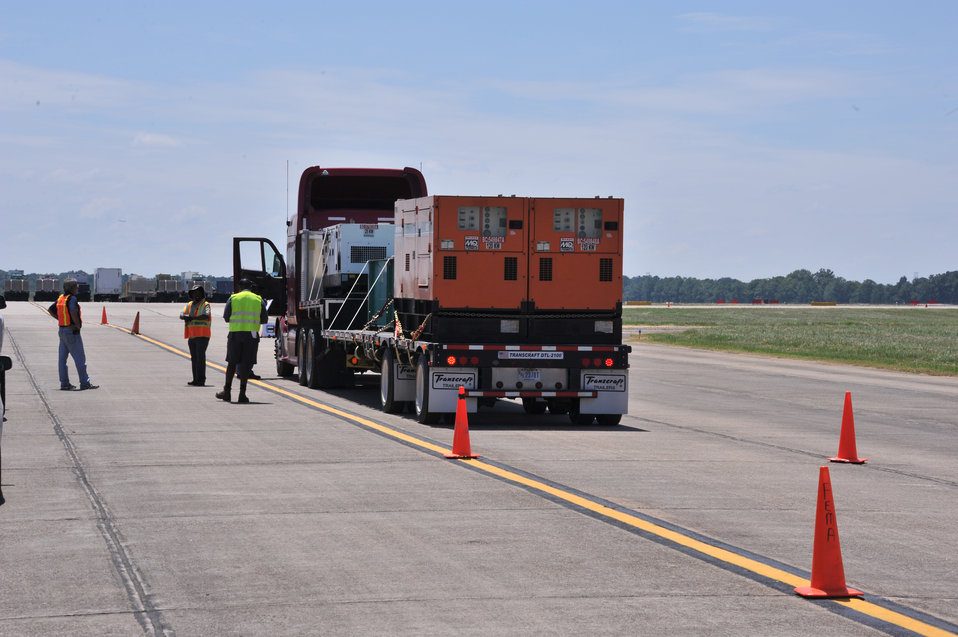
Maxwell, FEMA prepare relief supplies for Tropical Storm Isaac

Maxwell Air Force Base hosts Federal Emergency Management Agency trucks waiting to assist areas in the southeast effected by Tropical Storm Isaac, Aug. 27. FEMA trucks hold supplies to include water, cots, food and medical supplies.